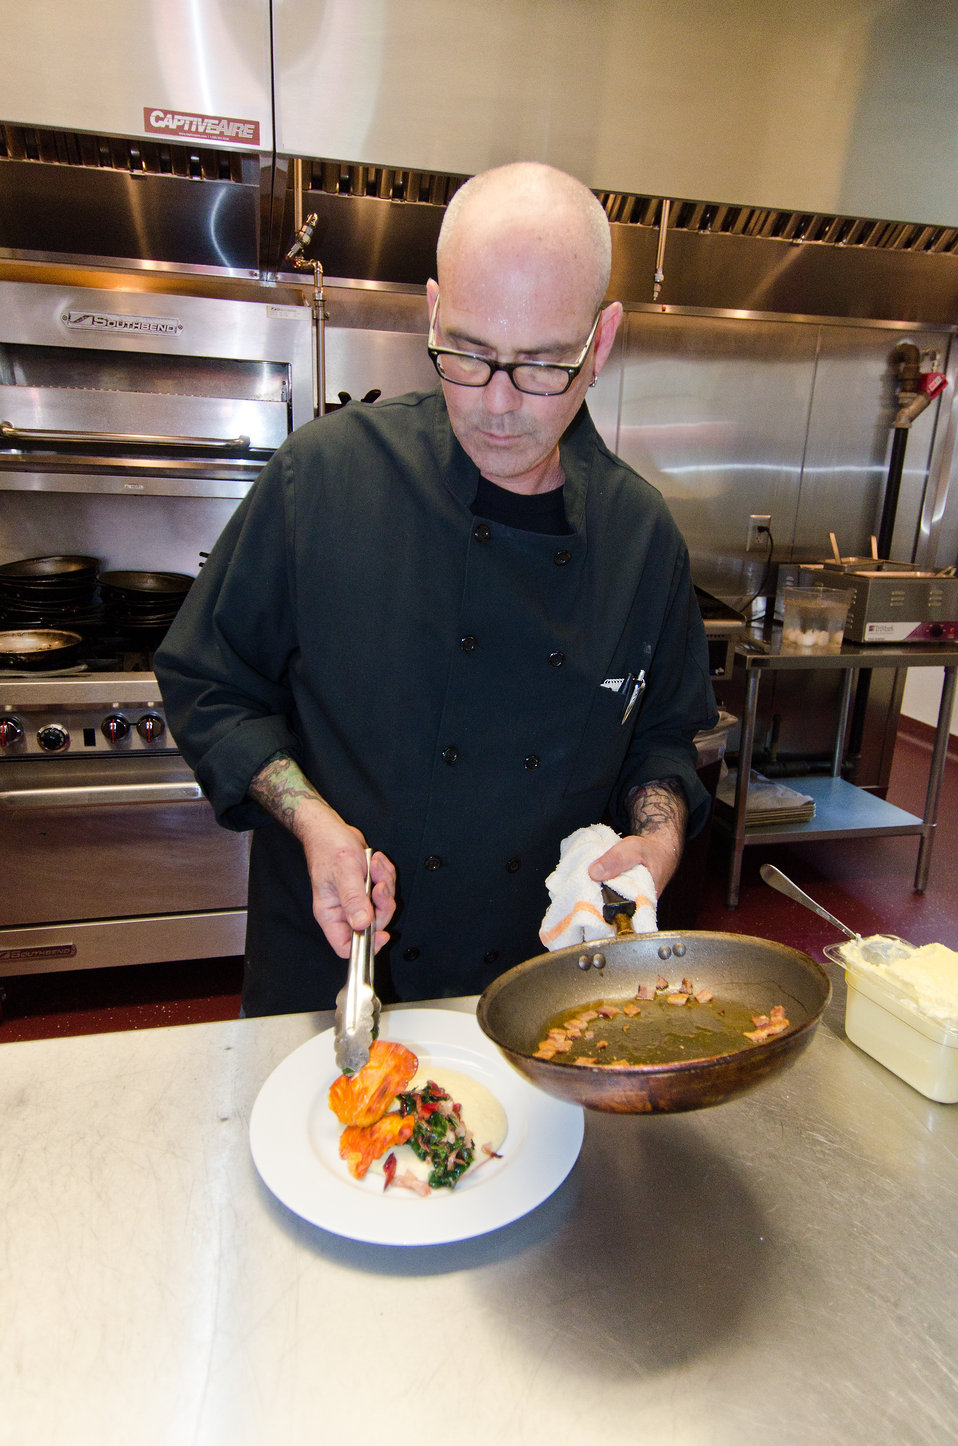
Chef David Rosenthal prepares a dish of Polenta, sautéed Red Swiss Chard, Hen of the Wood mushrooms, Bacon and Parmesan cheese at Inspiration Kitchens in Chicago, Illinois, on Friday June 8, 2012. Chef Rosenthal is a teaching chef at Inspiration Kitchens a social enterprise restaurant of Inspiration Corporation. Inspiration Kitchens prepares contemporary American cuisine prepared and served by students and graduates in their food service training program. The kitchen also offers career services, employment preparation training, tuition subsidies, employer outreach, and job placement and retention services throughout Chicago.